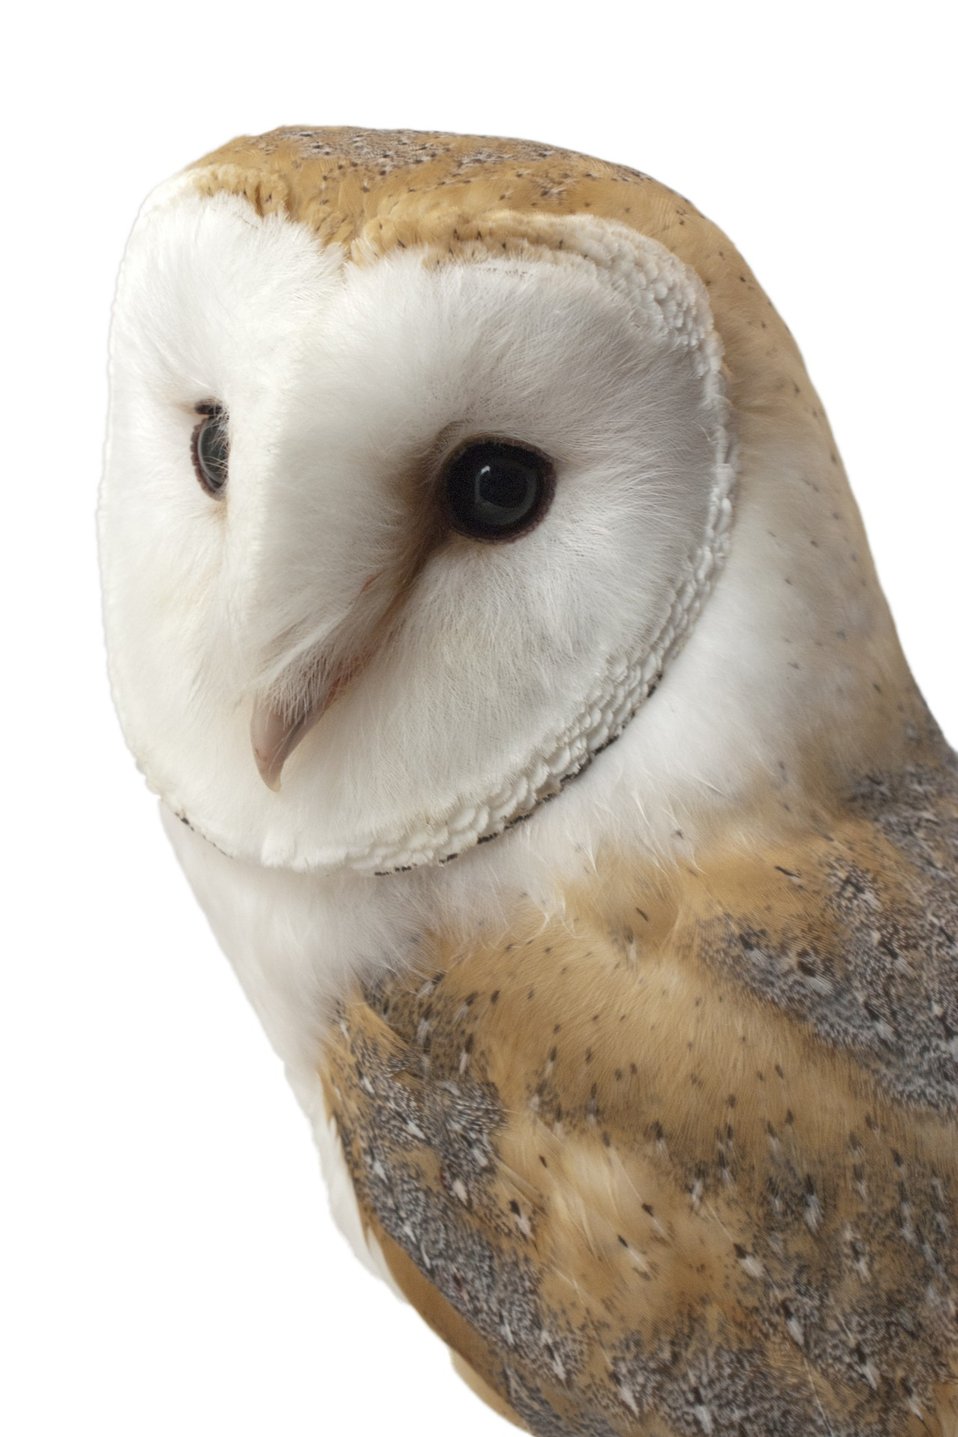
Barn owl isolated on white background.